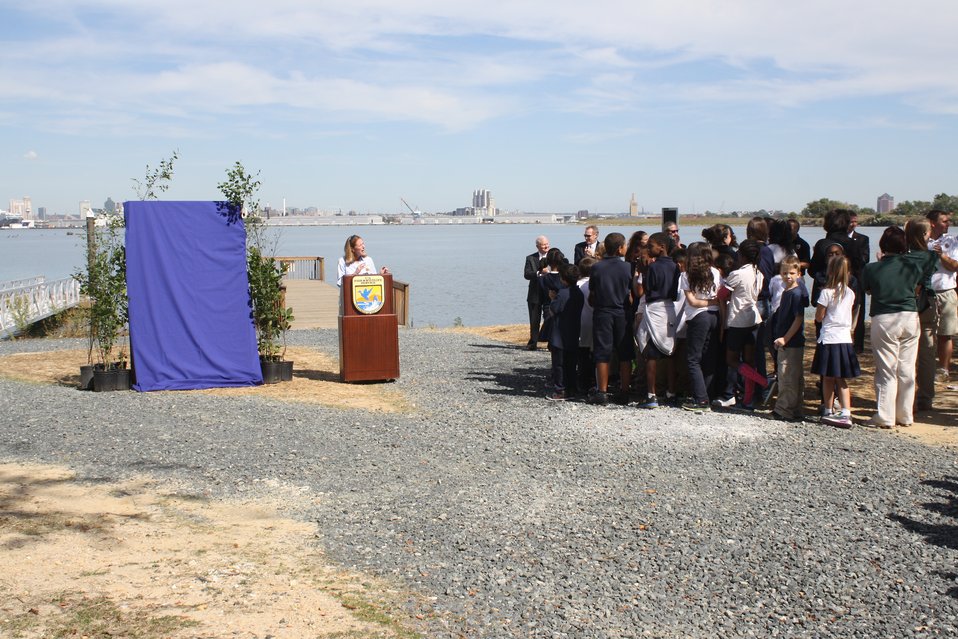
Northeast Regional Director Wendi Weber speaks at the Masonville Cove designation ceremony. Ther partnership at the site was designated as the nations's first urban wildlife refuge partnership on September 26, 2013.